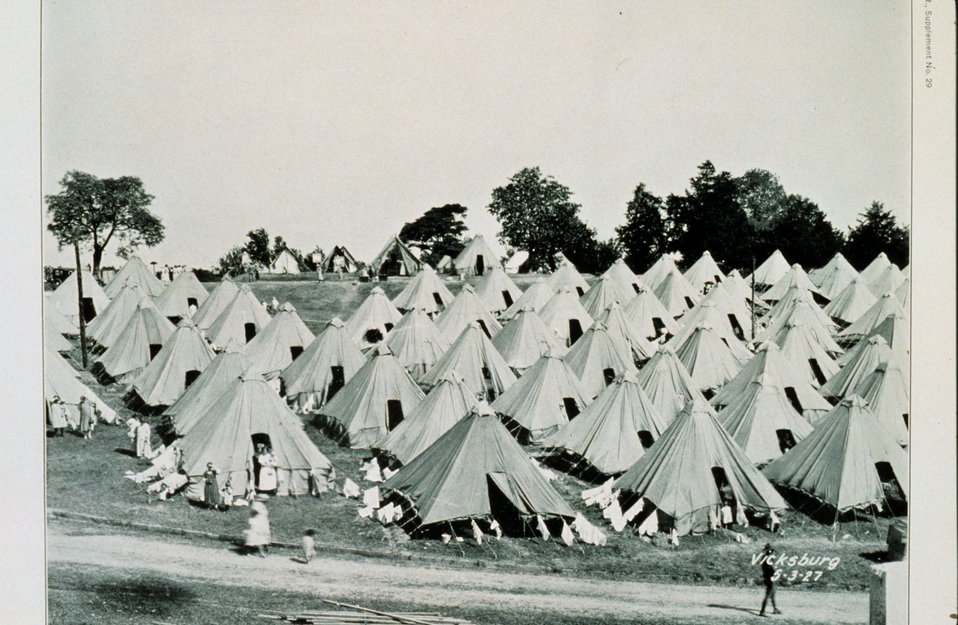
The Great Mississippi River Flood of 1927 A refugee camp at Vicksburg, Mississippi, on May 3, 1927 This was a nice camp on high ground Many refugees had to live on the levees for months until the water receded Monthly Weather Review Supplement No. 29